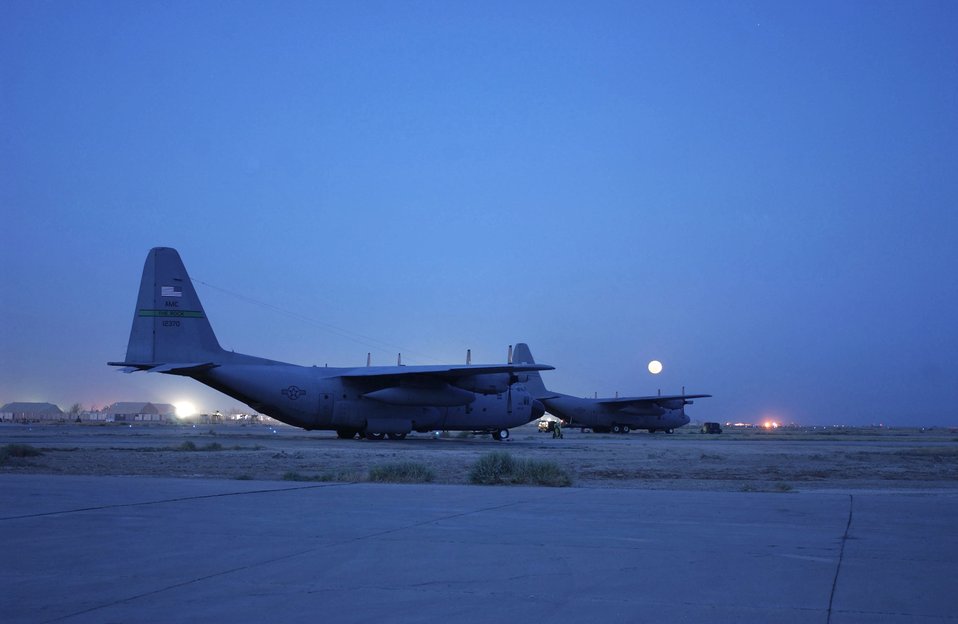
As the world turns

TALLIL AIR BASE, Iraq -- The moon rises in the distance here over two C-130 Hercules aircraft as the sun sets April 24.